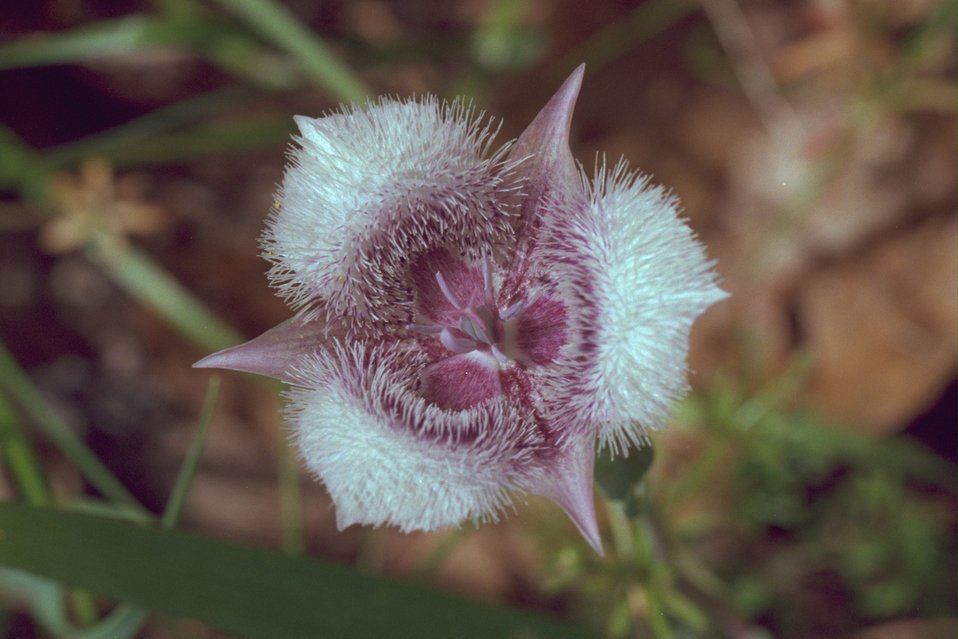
Cat's Ear (Calochortus tolmiei) at Lower Table Rock.